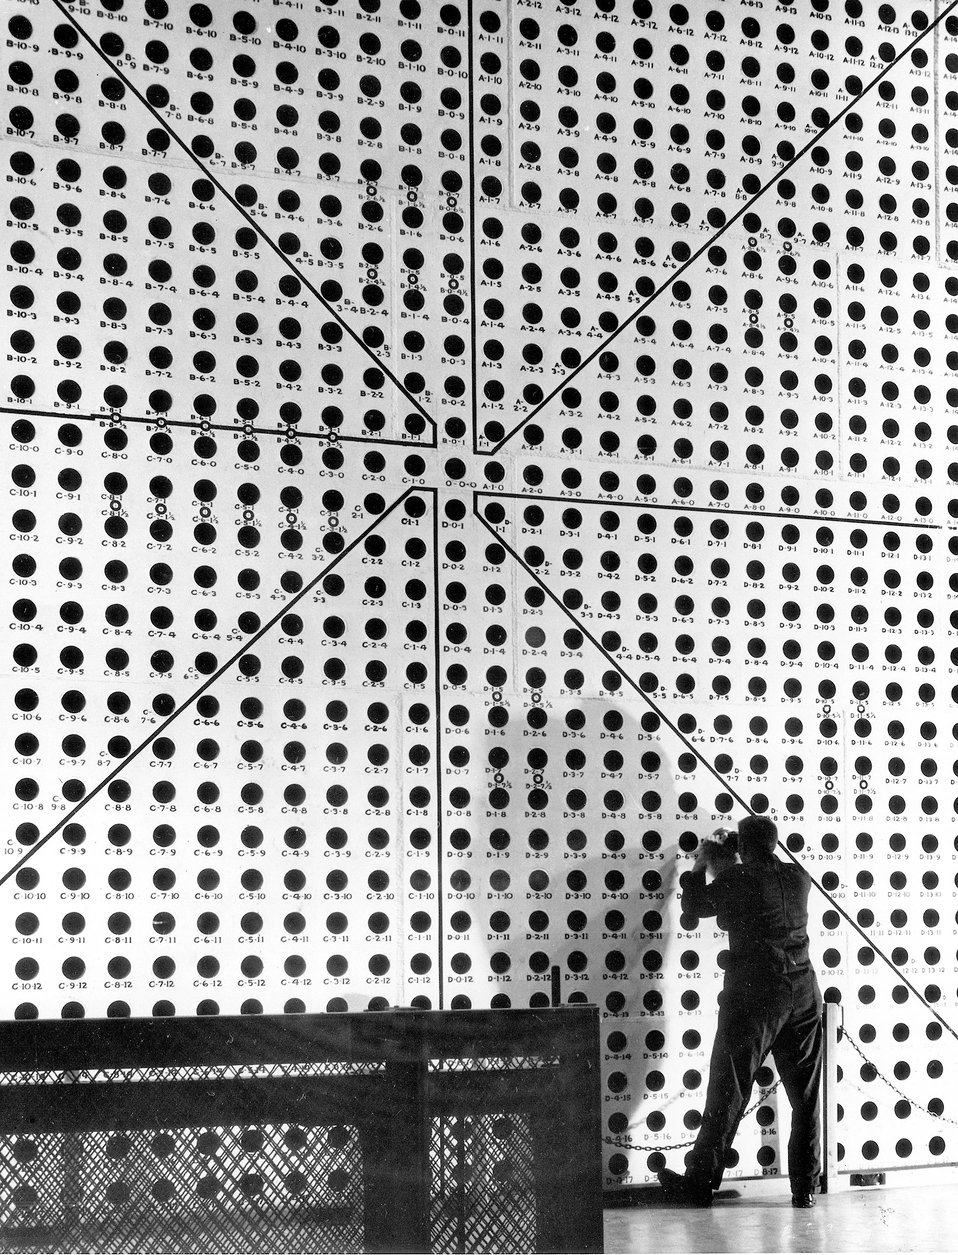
Through these holes in the south face of the Brookhaven reactor are introduced tons of pure uranium metal. c. 1954